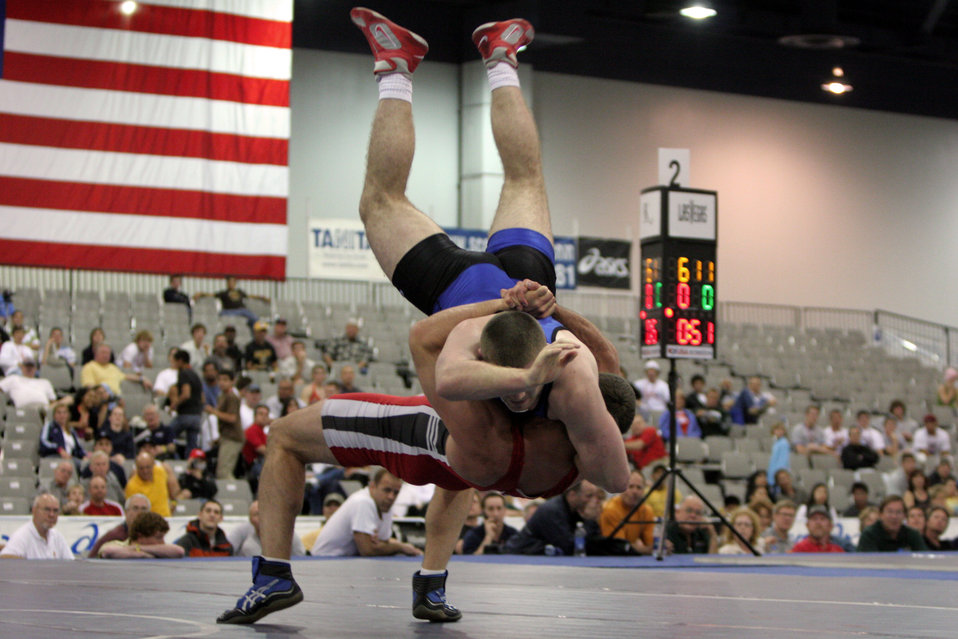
Air Force wrestlers take two medals at nationals

LAS VEGAS -- Philip Johnston (bottom), a 211.2-pound division Greco-Roman wrestler, pulls off a lift and throw on his opponent, J.D. Bergman of the Ohio International Wrestling Club, during a consolation match of the 2005 U.S. Nationals Wrestling tournament held here April 29. Johnston won the match 5-0, 8-0, and took 3rd place in his weight class.